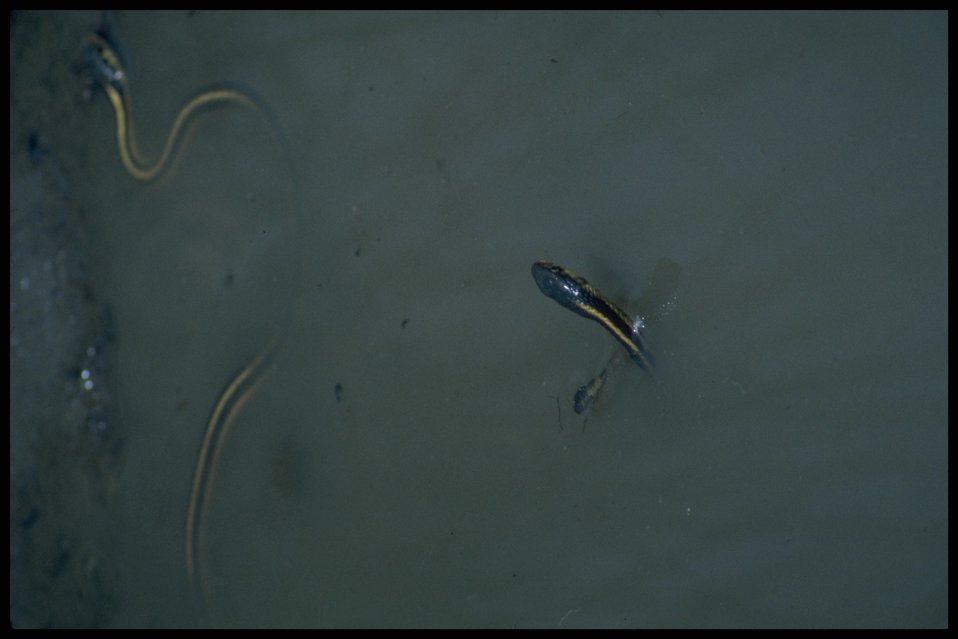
Garter snake in water, Lakeview District.